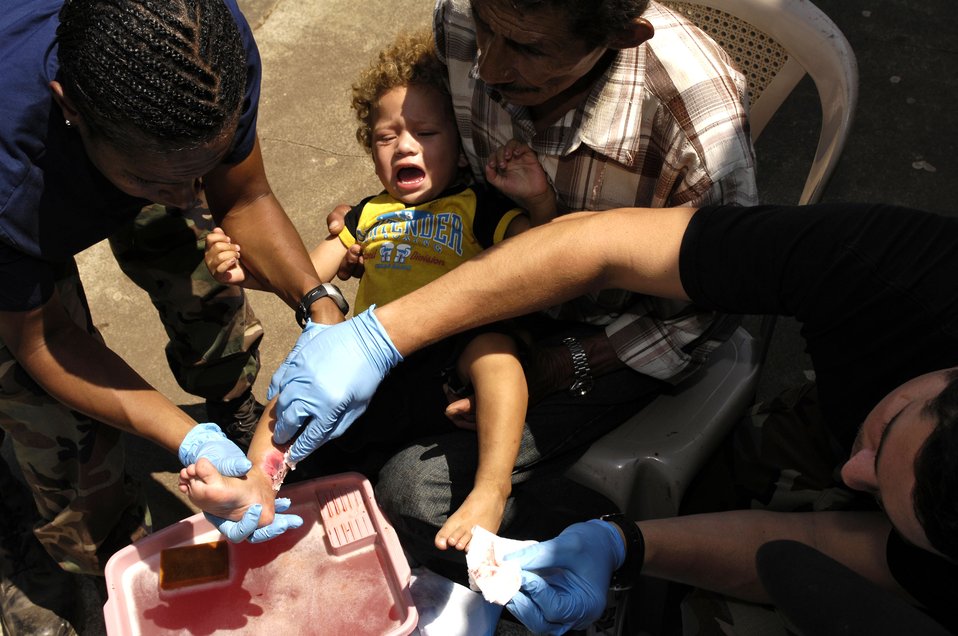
Airmen complete Nicaraguan medical exercise

Captains Cherie Smith and Matthew Gill perform a debridement and dressing of third degree burns on a child's leg while participating in Medical Readiness Training Exercises in Santa Teresa Feb. 26 during New Horizons - Nicaragua 2007. The $7.25 million joint U.S. and Nicaraguan military humanitarian and training exercise provides a new school and medical clinic, as well as free health and veterinary care, giving aid and strengthening bonds between the two nations. The captains are assigned to the 9th Medical Group at Beale Air Force Base, Calif.